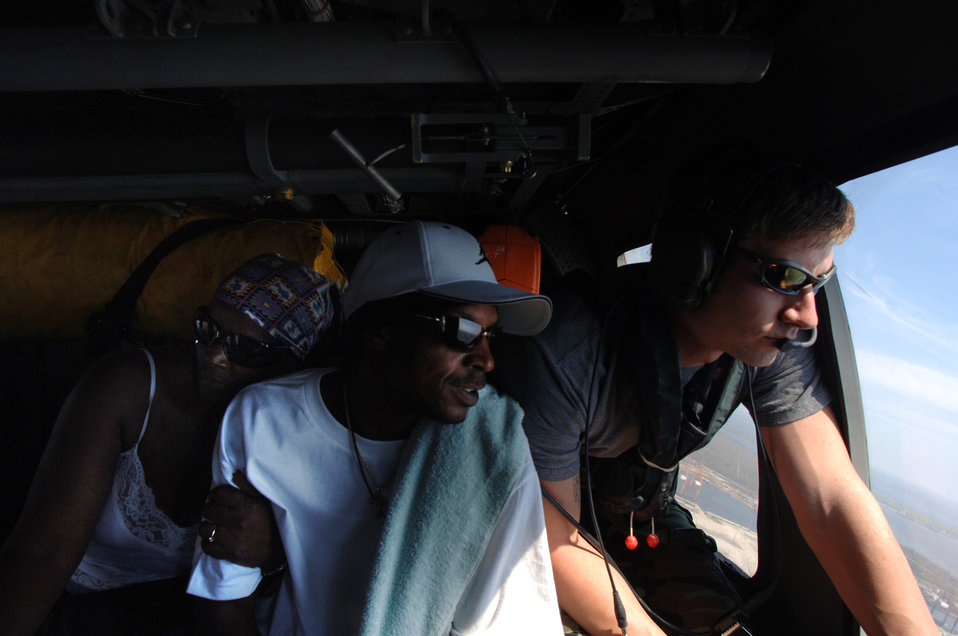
Air Force rescues top 4,000 mark

NEW ORLEANS -- Yasmine Lee Johnson clings to her husband, Clarence, as they are flown to Louis Armstrong New Orleans International Airport to join other evacuees being rescued from the flood waters of Hurricane Katrina's devastating aftermath. The helicopter and crew are with the 347th Expeditionary Rescue Group operating out of Jackson, Miss.